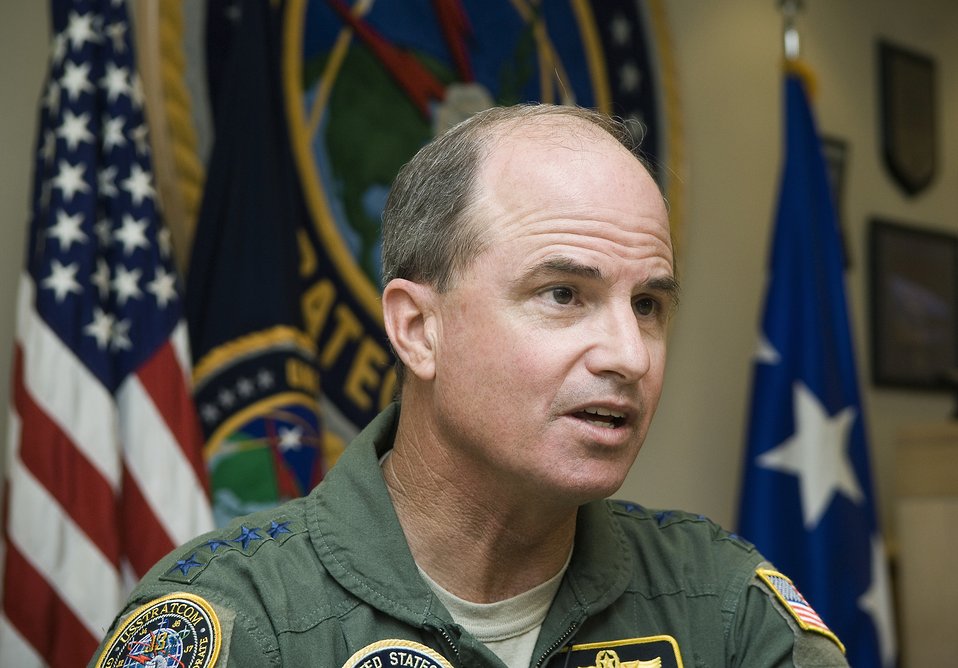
U.S. Strategic Command leader charts nuclear path for American military

Gen. Kevin P. Chilton speaks on the mission and capabilities of the U.S. Strategic Command Aug. 15 at Offutt Air Force Base, Neb. General Chilton is the STRATCOM commander.